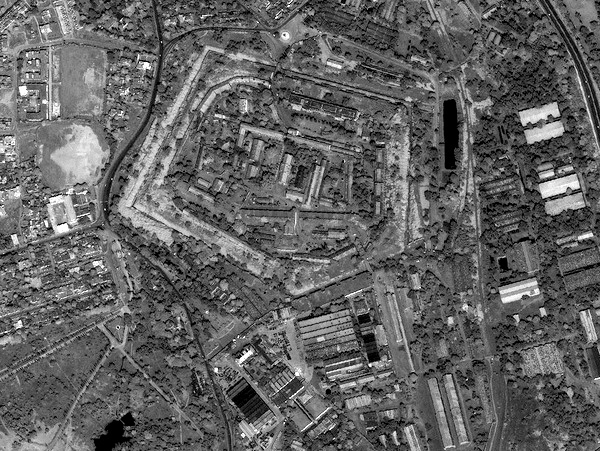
Geospatial-Intelligence Agency provides more than just maps

Satellite image of Islamabad, Pakistan.